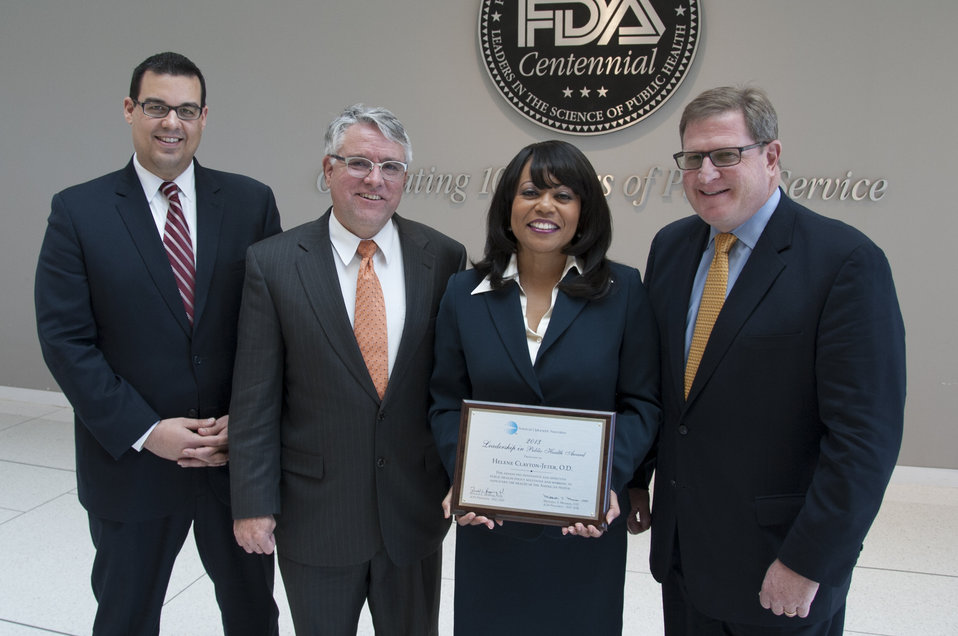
AOA Leadership Award - 9857

Nov. 18, 2013; Dr. Helene Clayton-Jeter accepted The American Optometric Association (AOA) 2013 Leadership in Public Health Award for her hard work and success in advancing innovative and effective public health policy solutions, and for helping safeguard the health of the American people. She is shown here (from left to right) with Matt Willette, AOA Assistant Director of Federal Government Relations; Michael Duenas, AOA Chief Public Health Officer; and Jon Hymes, AOA Director.

For more information on Helene's award, read this FDA Voice blog post: blogs.fda.gov/fdavoice/index.php/2013/12/a-vision-worth-h...

This photo is free of all copyright restrictions and available for use and redistribution without permission. Credit to the U.S. Food and Drug Administration is appreciated but not required. Privacy and use information: www.flickr.com/people/fdaphotos/